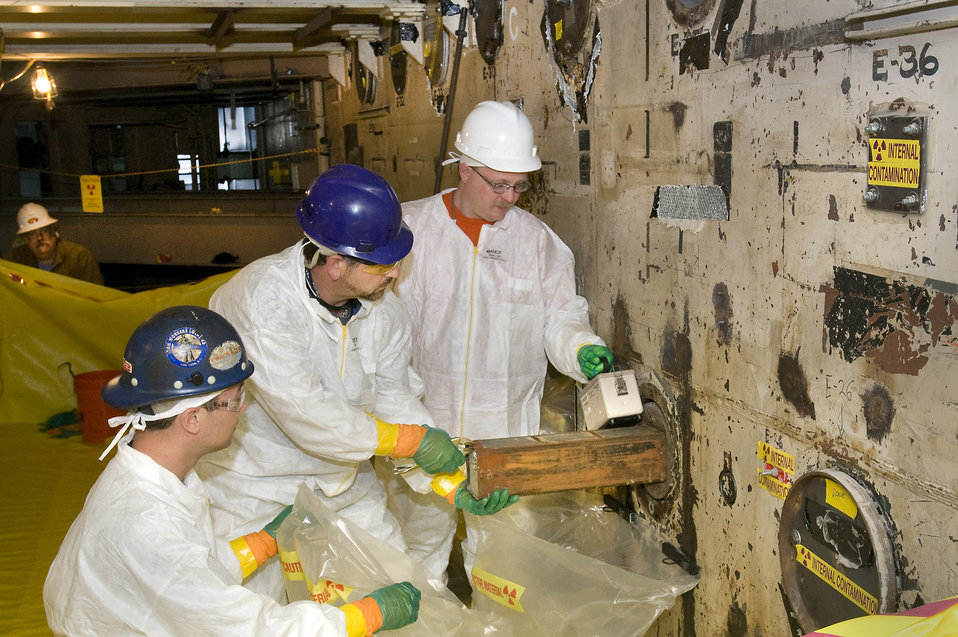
Brookhaven BGRR Decommissioning

Workers remove a control rod sleeve from the biological shield in the Brookhaven Graphite Research Reactor.